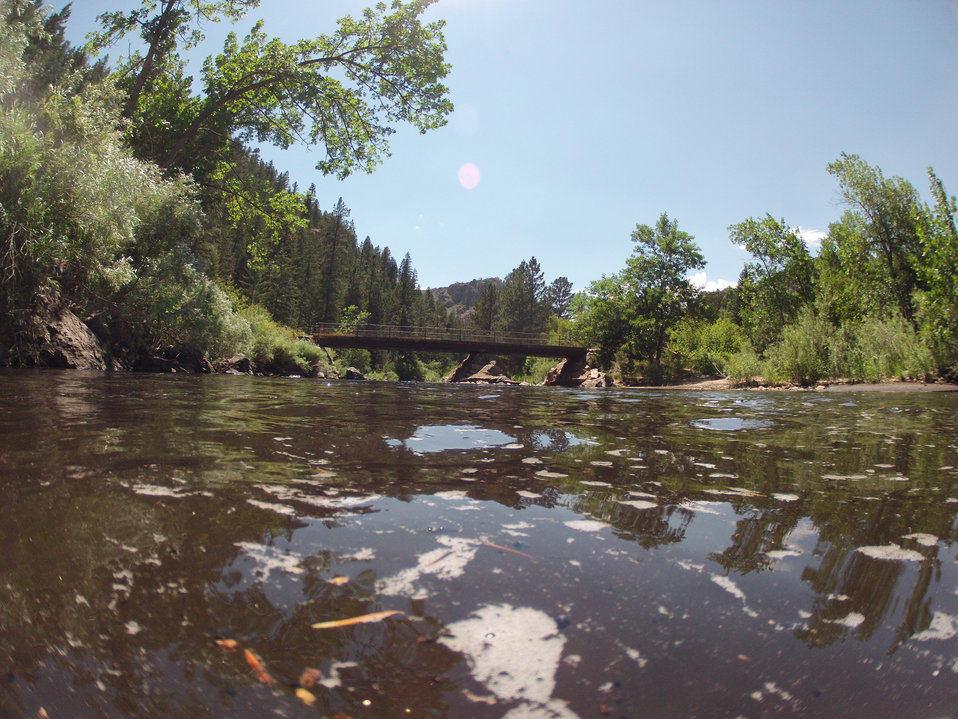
A confluence of two tributaries, the Cache la Poudre and the North Fork of the Cache la Poudre, near Seaman Reservoir, 60 miles north of Denver, Colorado on Friday, July 20, 2012, have been transformed from clear mountain waters to a nearly black water, heavily laden with ash, silt, and burnt debris that was recently washed down mountainsides by thunderstorms. The mountainsides were burned by the Hewlett Gulch Fire (May 14, 2012), in the Poudre Canyon area. At its peak more than 400 firefighters were battling fires pushed by 50 mph winds. When the last embers were cooled, more than 12-square miles lay blacked at a cost of approximately 3.2 million dollars. The aerial distribution of straw has successfully kept nearby Seaman Reservoir clean for the drinking water of the City of Greeley. Forest Service lands receive straw, while private and other lands receive a seed mix and straw to promote ground cover plant growth on ash-covered lands. In total, 1,800 tons of straw will be applied during the 14-day operation. One quarter of the cost was paid by the City of Greeley and the U.S. Department of Agriculture funded the remainder.